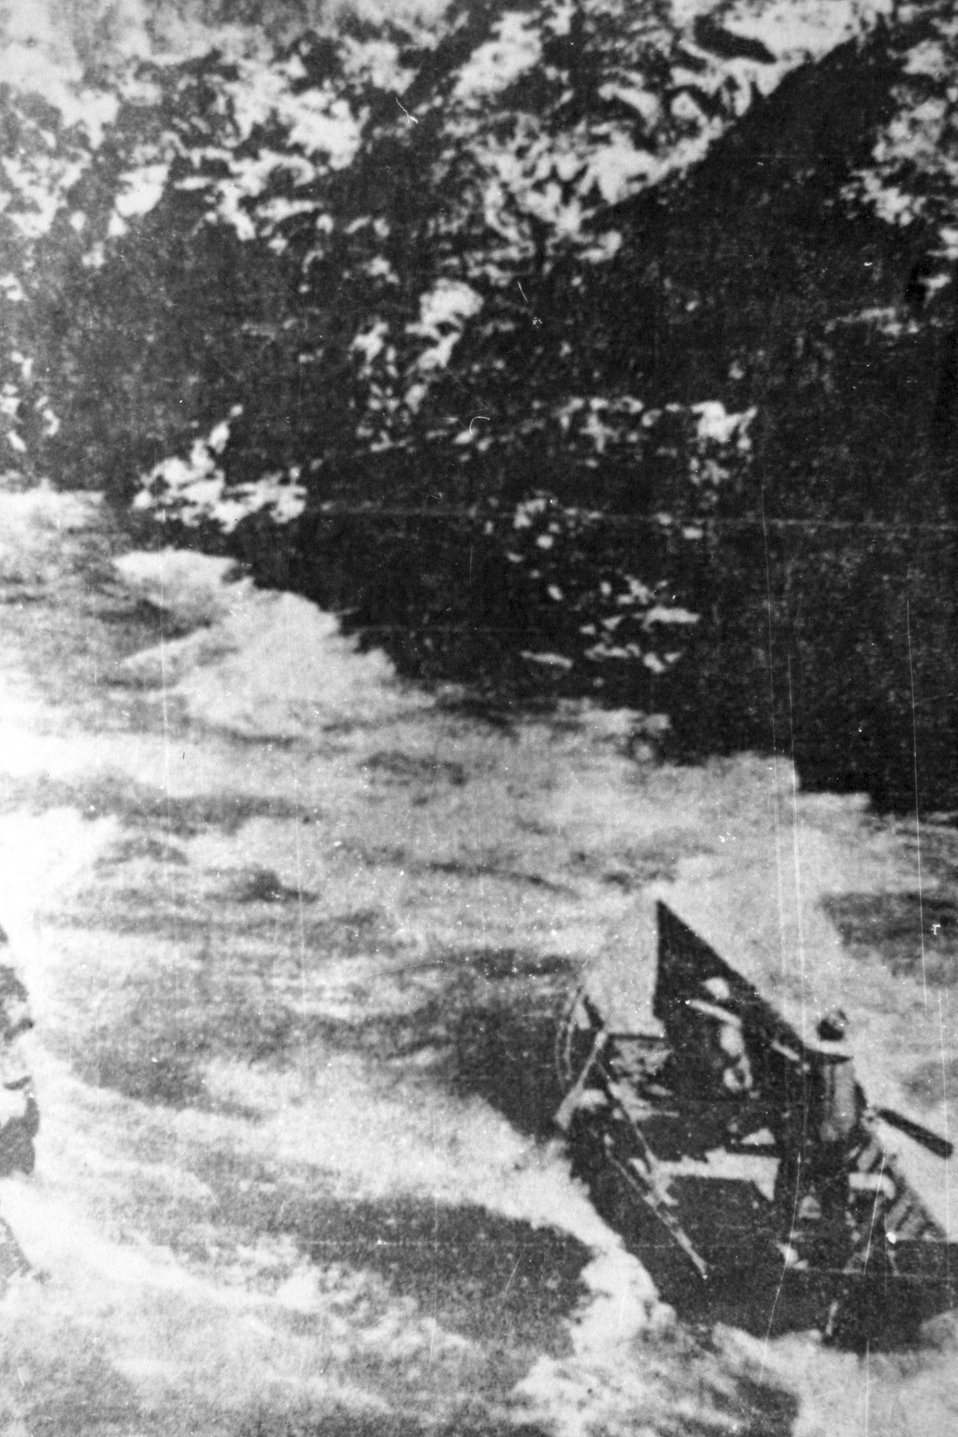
Glen Wooldridge beginning 1947 trip up Rogue River from the mouth of the river. It was the first trip up the river in a motor boat.